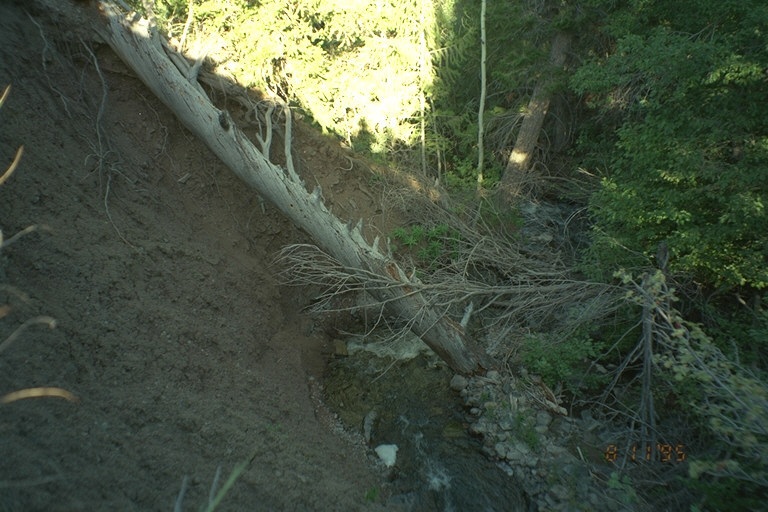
Riparian area Public Lands Salmon Field Office UCSC Upper Columbia Salmon Clearwater District